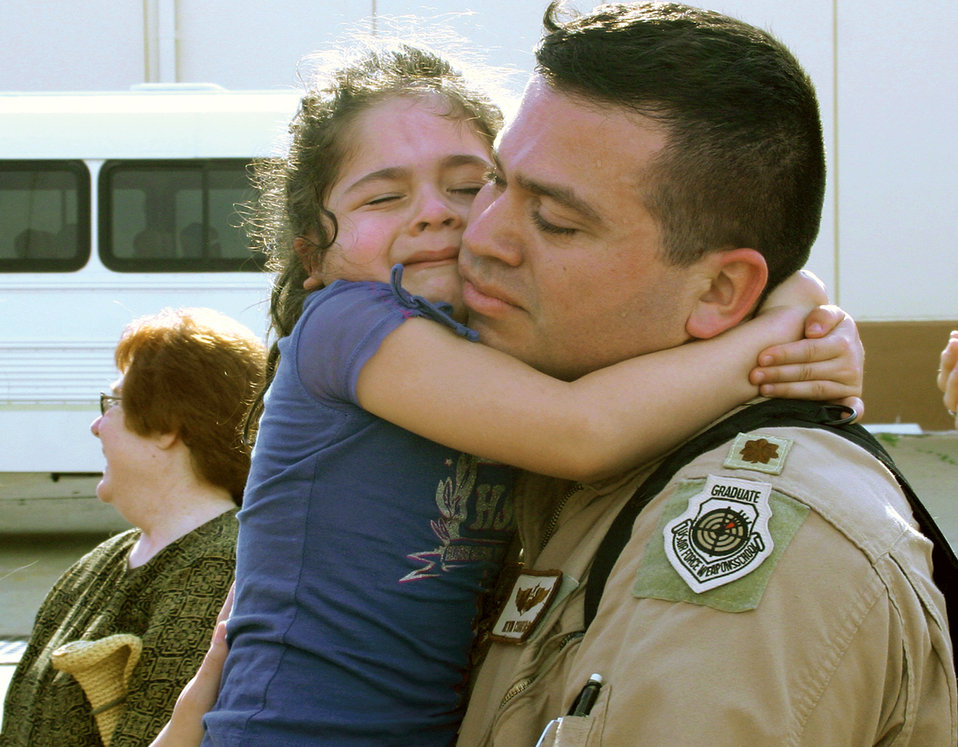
Welcome home, Daddy!

Maj. Kevin Cuartas greets his daughter after returning to Tinker Air Force Base, Okla., May 27, 2010, after a four-month deployment to Southwest Asia. Approximately 150 Airmen from the 552nd Air Control Wing supported on-going operations in Afghanistan. Major Cuartas is the chief of weapons and tactics for the 965th Airborne Air Control Squadron.